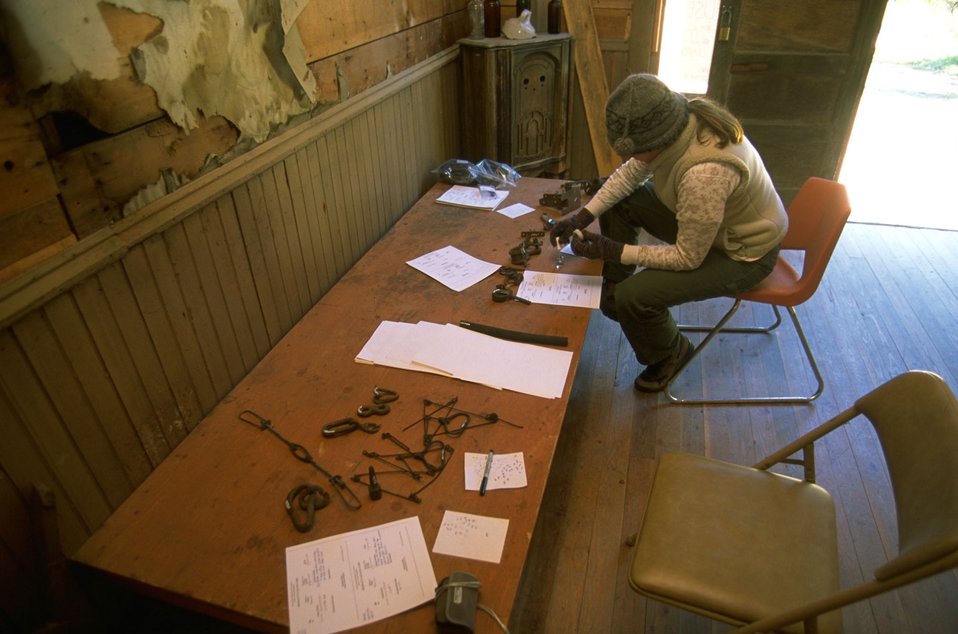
Looking at historic artifact inside a building at Garnet Ghost Town